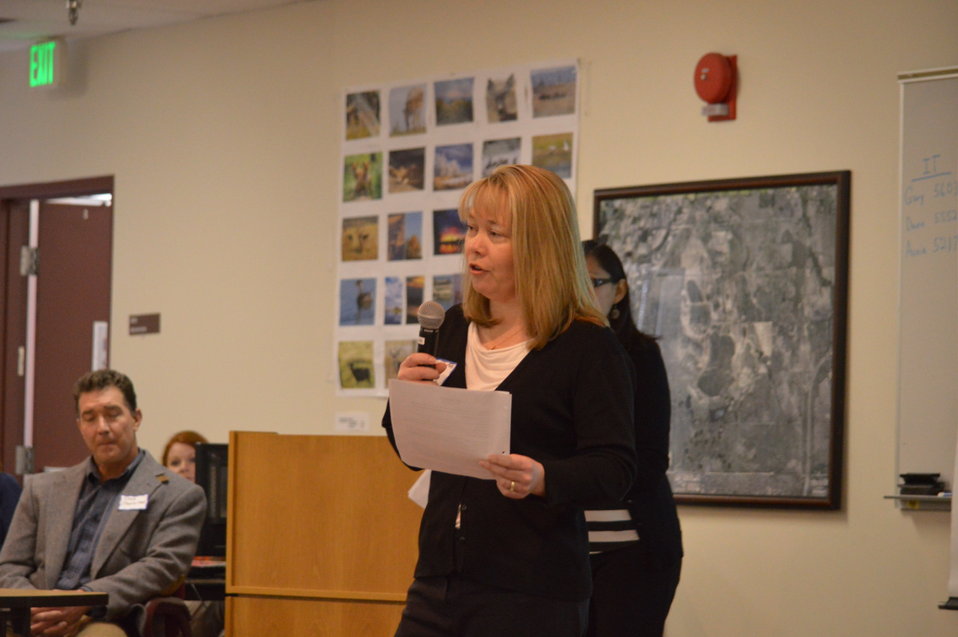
Eagle Summit III Opening

Noreen Walsh (Regional Director) welcomes attendees to the Eagle Summit III in Denver, Colorado on March 20, 2014 at the Rocky Mountain Arsenal National Wildlife Refuge.